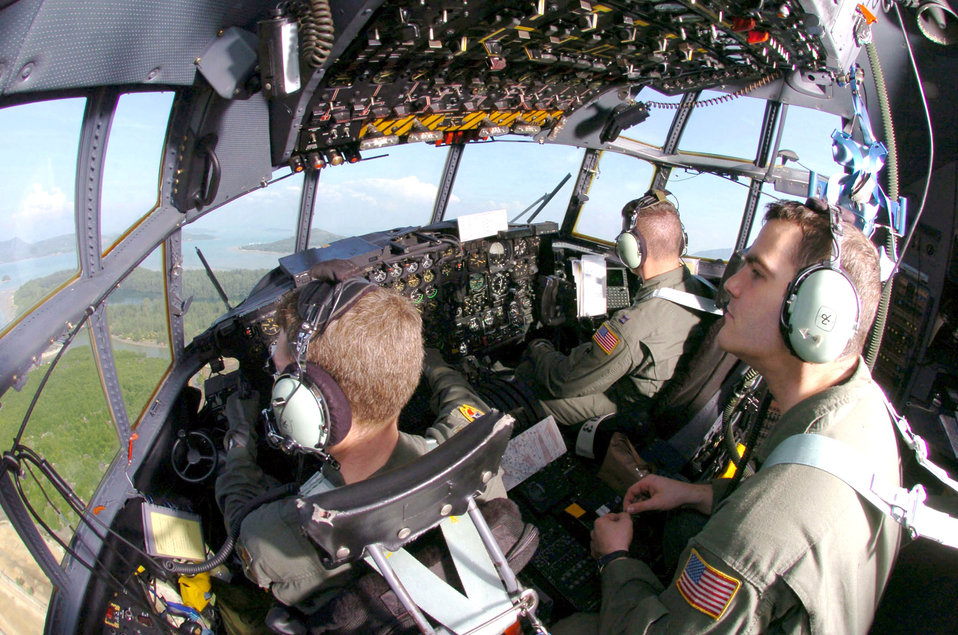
Yokota C-130s continue to fly aid to tsunami victims

PHUKET, Thailand -- (From left) Maj. Brian Geronime, Capt. Jason Fodor and Staff Sgt. Michael Whipple take off in a C-130 Hercules after they transported an engineering assessment team here Jan. 8. The crew is assigned to the 36th Airlift Squadron at Yokota Air Base, Japan. The squadron first delivered relief supplies and equipment to tsunami-devastated areas in Thailand, Indonesia and Sri Lanka on Dec. 29.